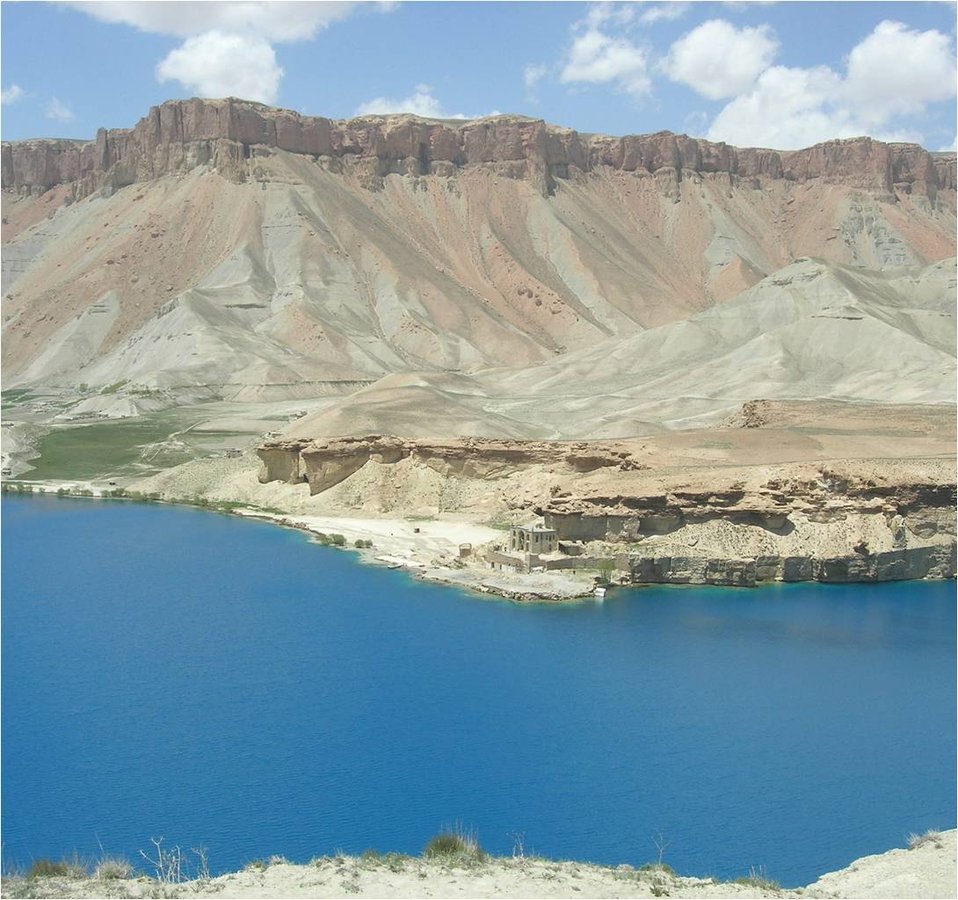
Afghanistan’s First National Park

The beauty of the area’s six cobalt-blue Band-e-Amir lakes always stuns visitors to central Bamyan province. Natural travertine dams, created by calcium deposits over many years, support the lakes. They stretch across the valley in long graceful arcs, and merge into a strikingly beautiful landscape of stone, desert, and water. The vistas rival those of national parks anywhere in the world.
Since 2006, USAID has been working through its implementing partner, the Wildlife Conservation Society (WCS), to develop the organizations and foster the consensus needed for creation of a national park in the lakes area. The efforts ultimately resulted in the Earth Day declaration in 2009, of Band-e-Amir as Afghanistan’s first national park by the Director General of Afghanistan’s National Environmental Protection Agency (NEPA).
Afghanistan’s Environment Law requires local management of protected areas. To fulfill that mandate, WCS initially educated the residents in the 13 villages located within the territory of the park about the economic opportunities that national park status would provide. The Band-e-Amir Protected Area Committee (BAPAC) recruited villagers to be members. BAPAC and WCS jointly prepared a management plan for the park, and WCS assisted local officials in successfully navigating the national park proposal process.
With USAID support, WCS is now training rangers to protect the flora and fauna in the park, and is educating the provincial and national government officials who must manage park operations and ensure sustainability. WCS continues to help the government develop laws and policies on protected areas and species and community-based natural resource management.
In anticipation of national park status, local entrepreneurs had already begun building small shops, restaurants, and hotels to serve tourists. USAID-funded partners provided guidance to help them place these structures away from the most ecologically sensitive areas. Now that the park has achieved official status and protection, the local people will have the opportunity to protect, preserve, and profit from this beautiful landscape.